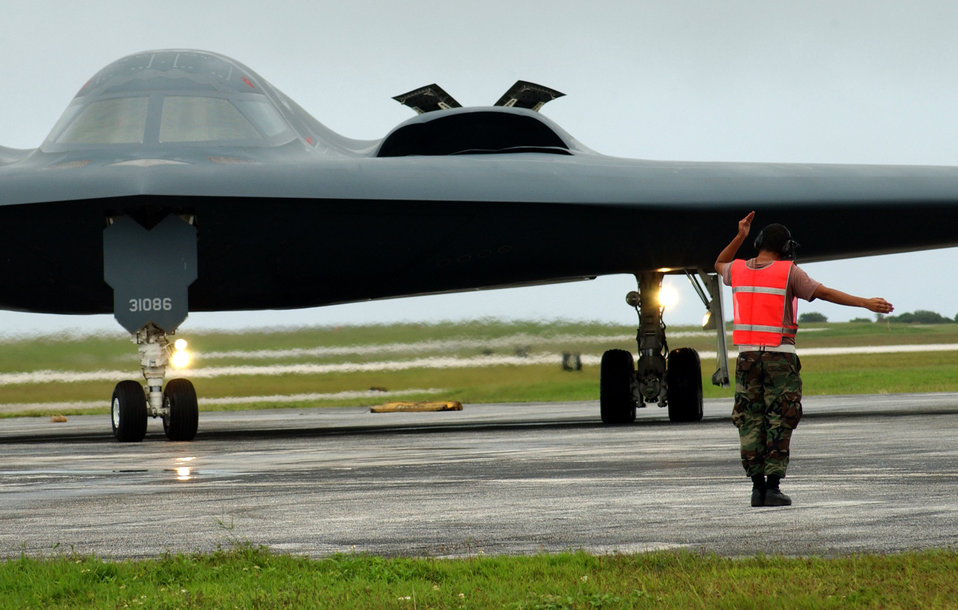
B-2s train with JTACs, drop bombs on target

A lone crew chief launches a B-2 Spirit stealth bomber for a training combat sortie Oct. 24 on the Pohakuloa Training Area, Hawaii. They practiced combat operations while working with joint terminal attack controllers on the ground that were calling in coordinates.